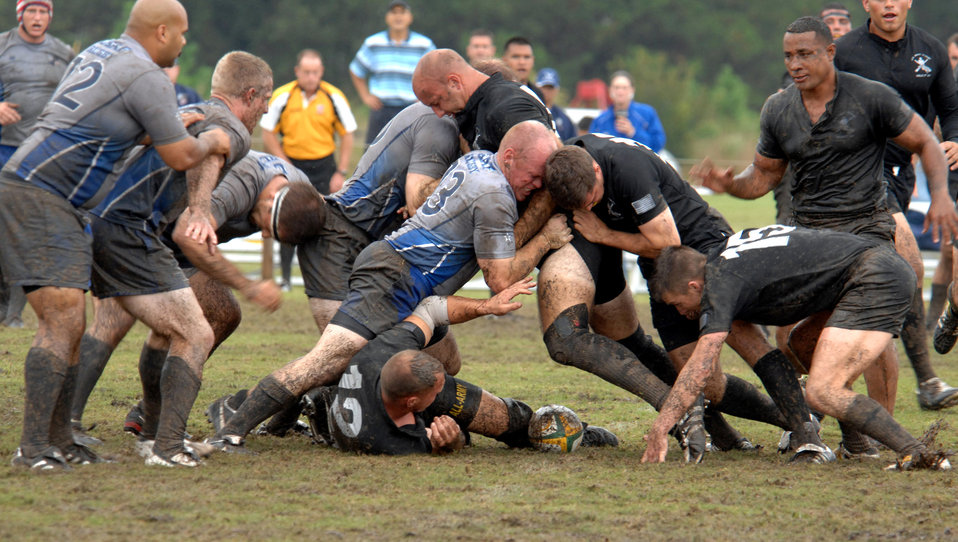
Air Force triumphs over Army

Two Army rugby players attempt to ruck Air Force player James Hubby while attempting to retrieve the ball during the 2007 Armed Forces Rugby Tournament Oct. 27 at Marine Corps Base Camp Lejeune, N.C. A ruck occurs when two players bind onto each other to attempt to push the opposition away from the ball.